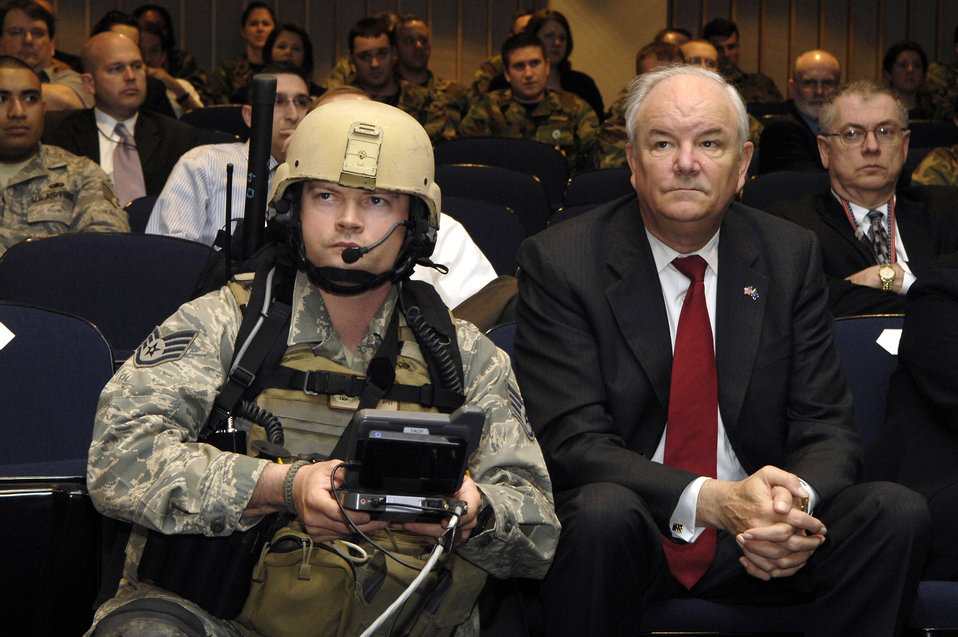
Air Force secretary discusses tankers, cyber operations

Staff Sgt. Justin Cremer nominates a target for a close-air-support mission during a demonstration conducted for Air Force Secretary Michael W. Wynne during his April 3 visit to Hanscom Air Force Base, Mass., April 3. The target was derived using a machine-to-machine interface, which by automatically transferring coordinates into the cockpit, streamlines the kill chain. Sergeant Cremer is a a tactical air control party Airman.